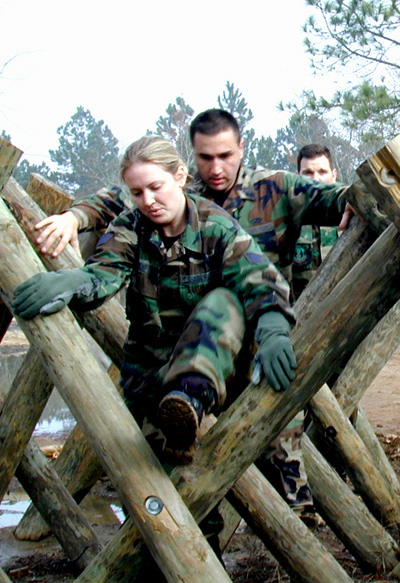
Follow the leader

GULFPORT, Miss. -- Senior Airman Julie Maxfield and 1st Lt. Karl Falk from the Air Force Material Command Top Dollar 2000 team work their way through the